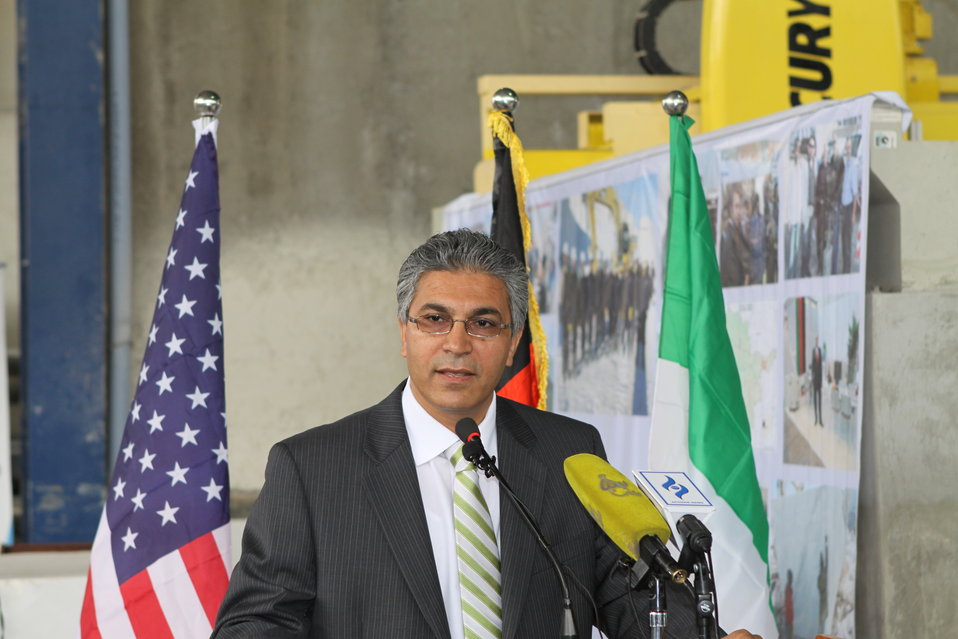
100525 Hirat Marble Conference 150